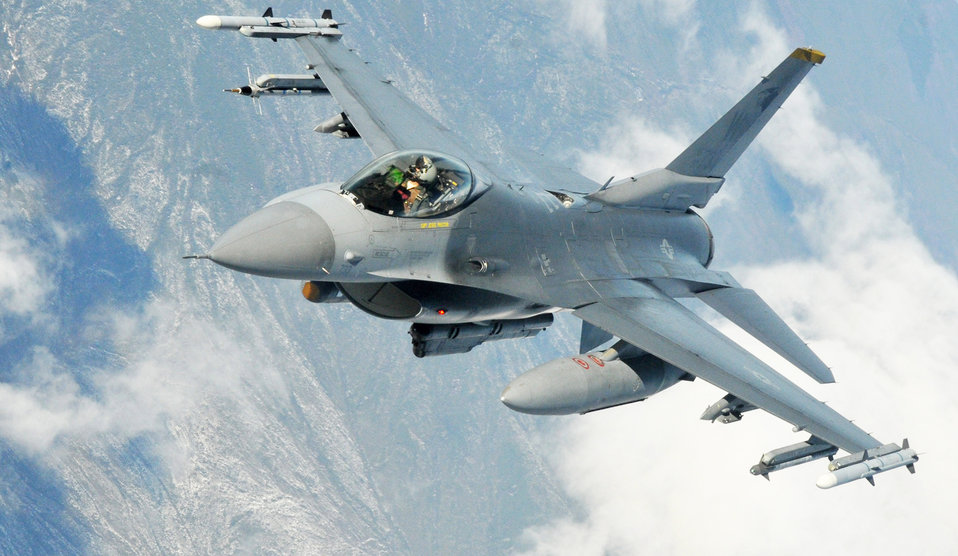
F-16s participate in Red Flag-Alaska

Capt. George Collings visually confirms as he rolls away after refueling from a KC-135 Stratotanker from Fairchild Air Force Base, Wash., during Red Flag-Alaska April 27, 2010. Captain Collings is an F-16 Fighting Falcon pilot from the 8th Fighter Wing at Kunsan Air Base, South Korea.